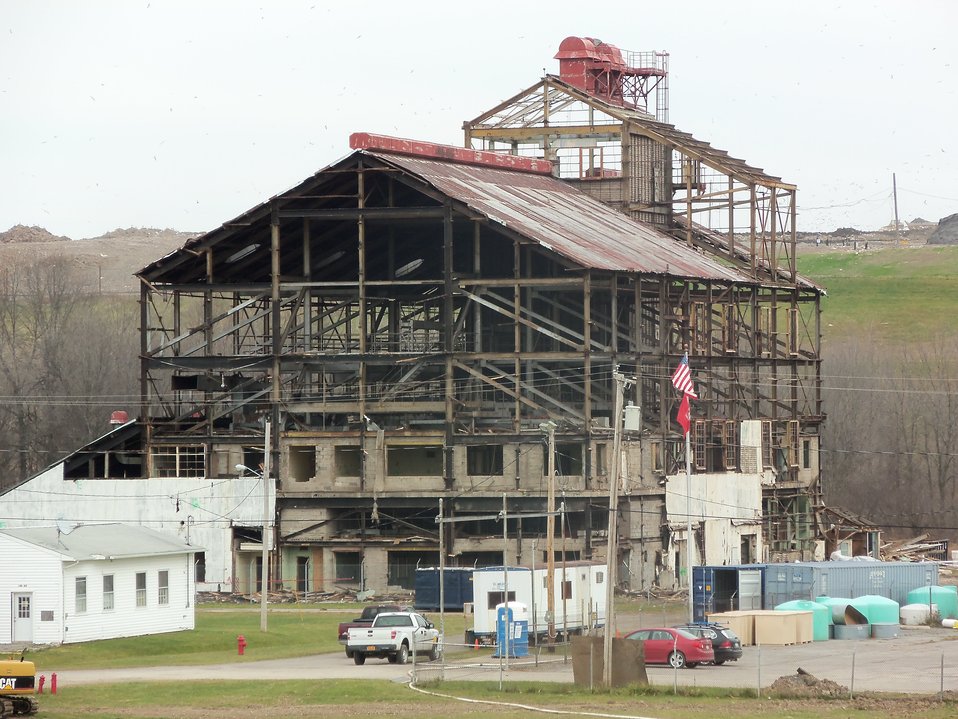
Building 401 shell with flag.
Activities from the Niagara Falls Storage Site, which is associated with the former Lake Ontario Ordnance Works. Formerly Utilized Sites Remedial Action Program (FUSRAP), a program initiated in 1974 to identify, investigate and clean up or control sites that were part of the Nation's early atomic energy and weapons program. Activities at the sites that are eligible for FUSRAP were conducted by Manhattan Engineer District (MED) or the Atomic Energy Commission (AEC), both predecessors of the Department of Energy (DOE). The U.S. Army Corps of Engineers was assigned management of FUSRAP by Congress in 1997.